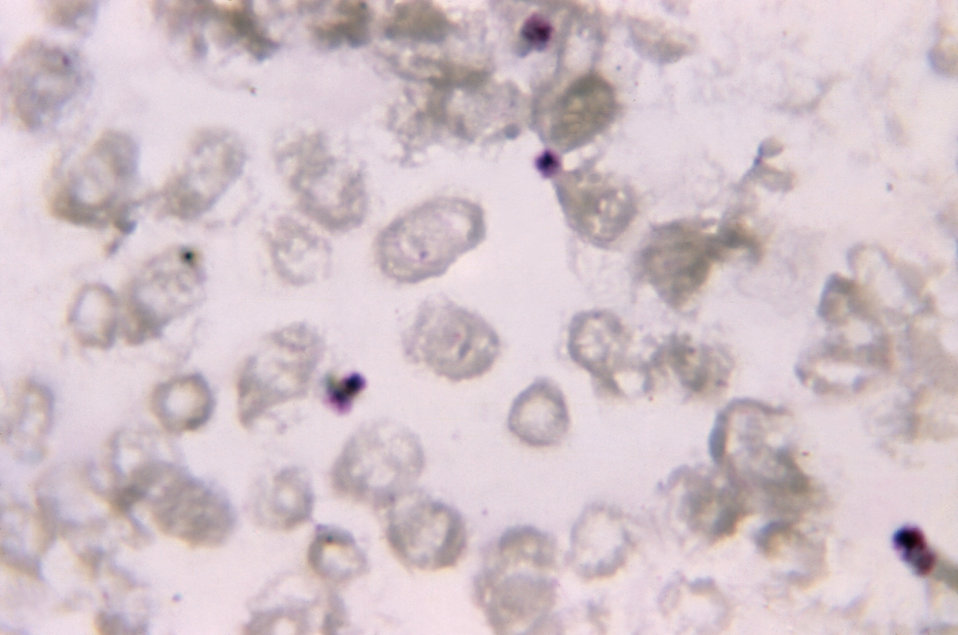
Water was present in the alcohol as a contaminant which resulted in a poorly fixed, Giemsa stained slide.